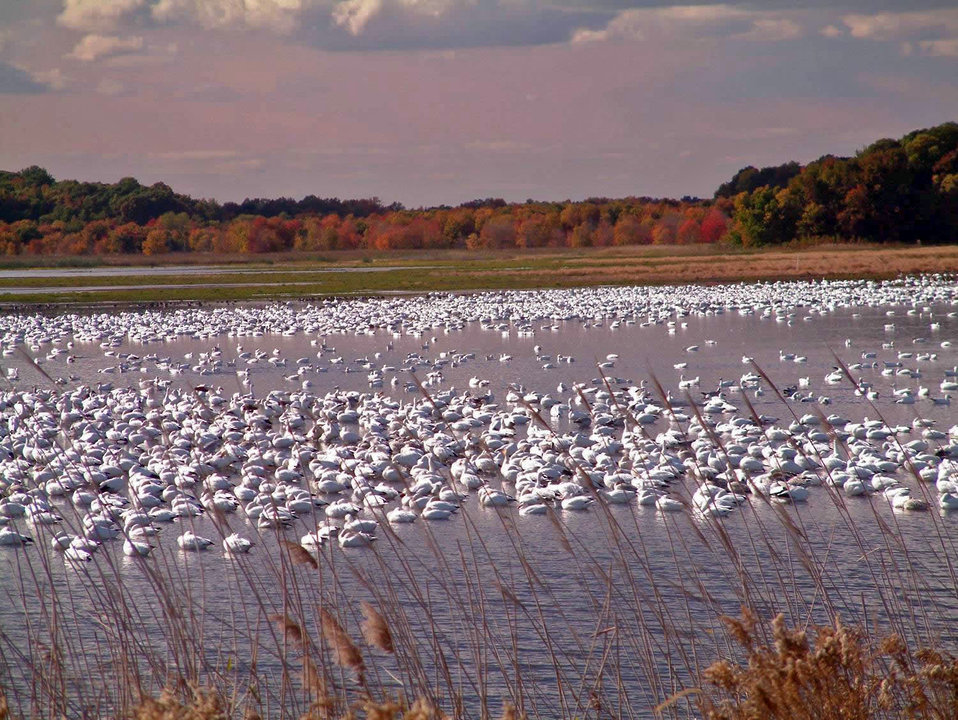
Snow geese in the fall at Prime Hook National Wildlife Refuge.